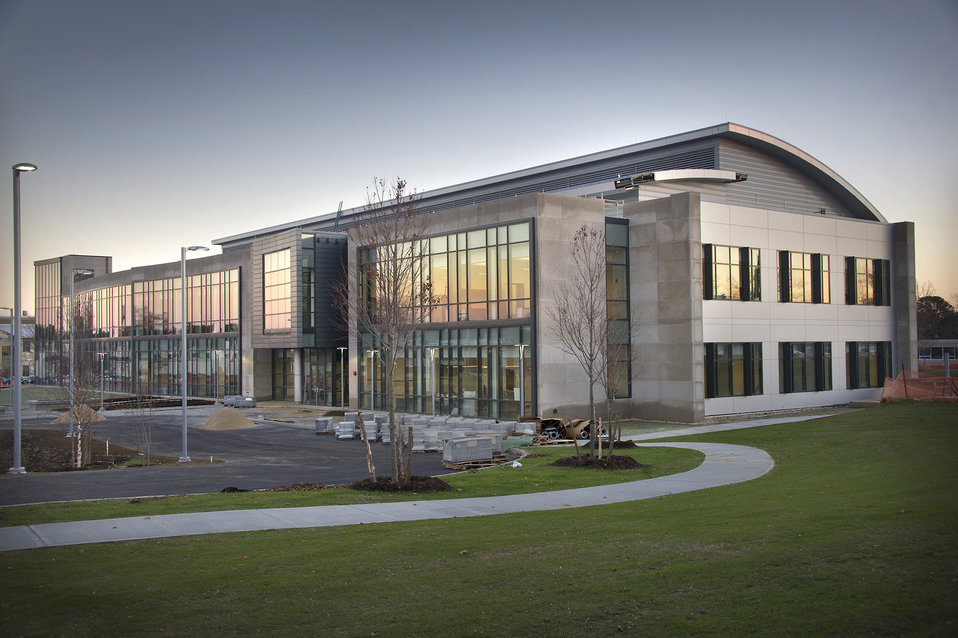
Shown is the Interdisciplinary Science Building at Brookhaven National Laboratory..

This two-story state-of-the-art building at Brookhaven National Laboratory will be a new, energy efficient and environmentally sustainable laboratory building that will provide modern, 21st-century, high-accuracy laboratories, offices and support functions. The building will group existing energy research scientists into one facility with collaborative environments to facilitate and realize the scientific benefits of multi-disciplinary collaboration. Work in the Interdisciplinary Science Building will focus on energy-related R&D enabling breakthroughs in the effective uses of renewable energy through improved conversion, transmission and storage.